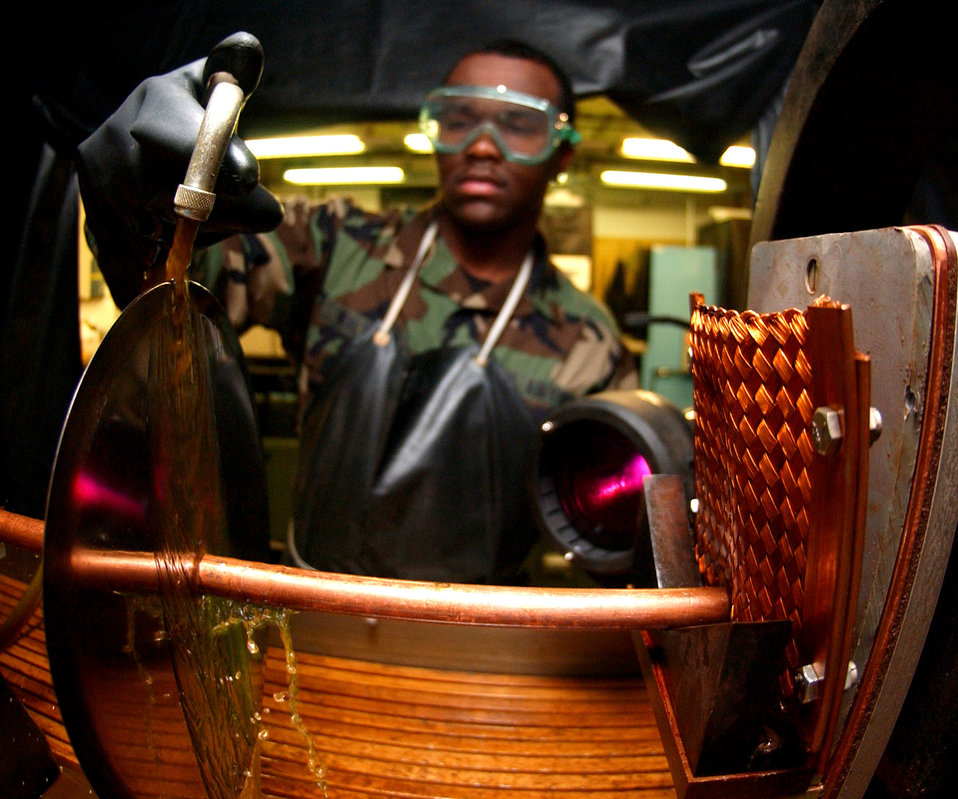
Magnificent

AVIANO AIR BASE, Italy -- Airman 1st Class Michael Walters uses a magnetic particle machine here Nov. 18 to magnetize aircraft parts to detect defects under florescent lighting. Airman Walters is assigned to the 31st Maintenance Squadron.